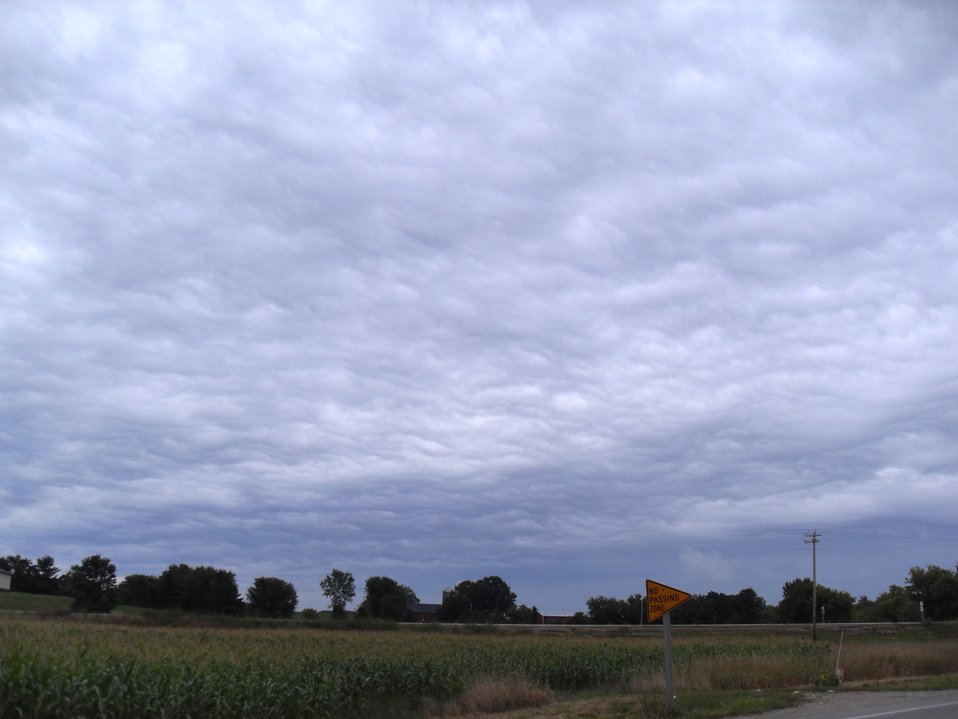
Wave clouds over eastern Wisconsin